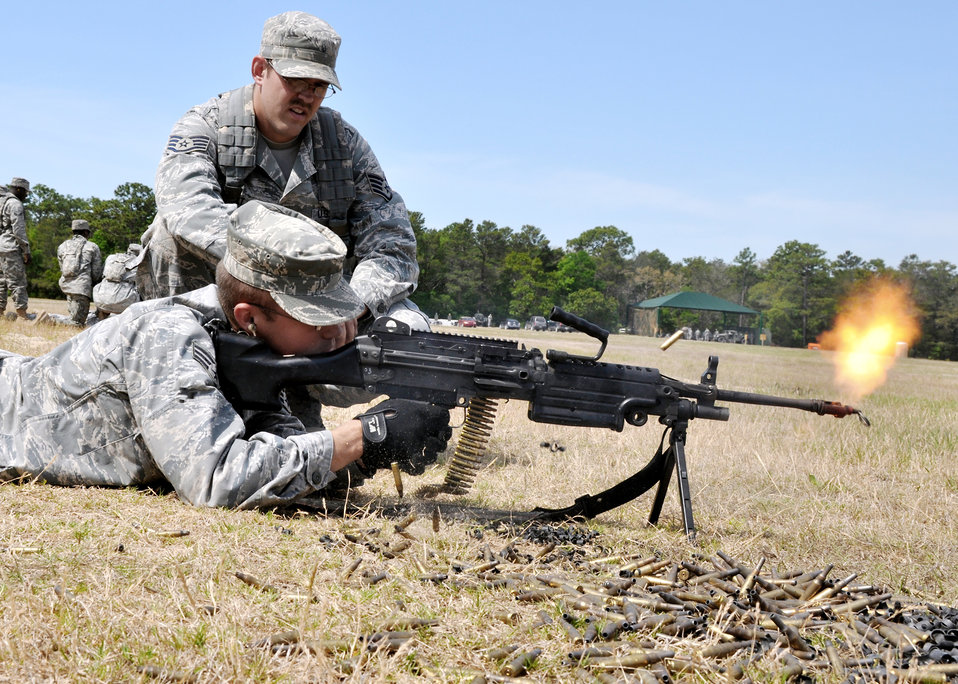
Brave Defender training

A security forces Airman fires blanks from an M249 machine gun while Staff Sgt. Jarrod Stewart watches during the weapons familiarization portion of Brave Defender training April 22, 2010, at Eglin Air Force Base, Fla. Sergeant Stewart is a 96th Ground Combat Training Squadron instructor.